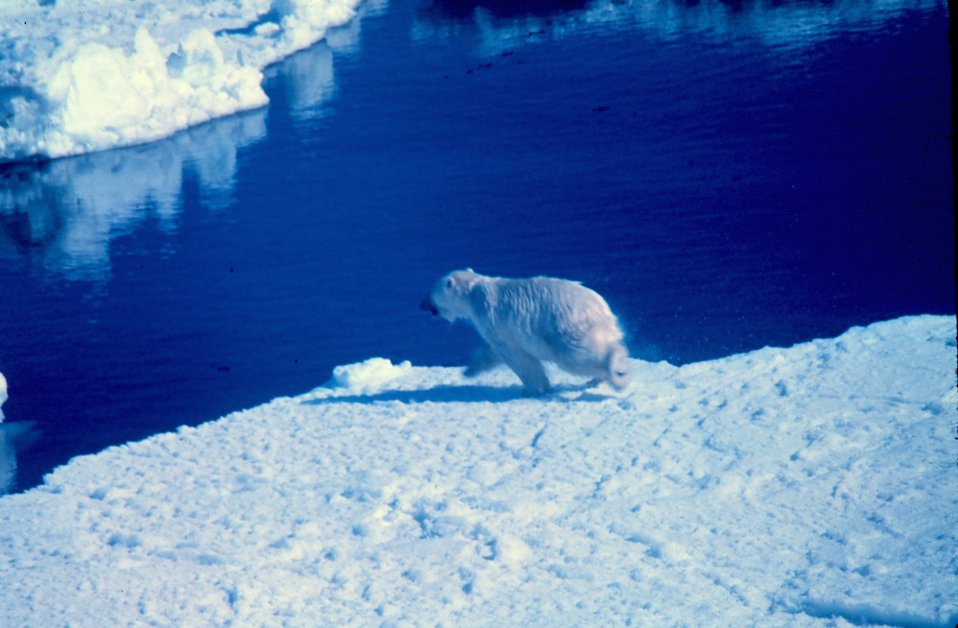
Polar bear - Ursus maritimus - running from helicopter noise during Outer Continental Shelf Environmental Assessment Program.